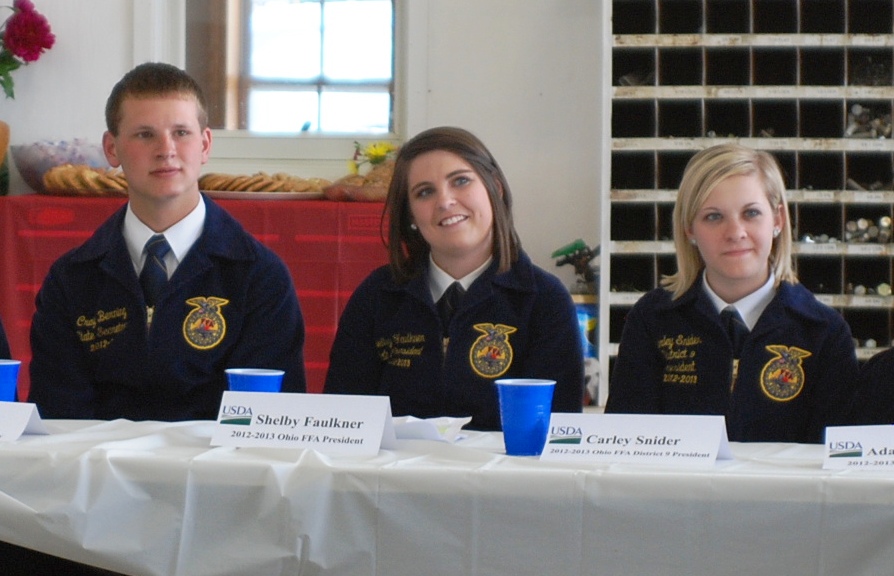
Ohio FFA members listen to Agriculture Acting Deputy Secretary Michael Scuse at an roundtable disucssion in Licking County, OH on Thursday, May 30, 2013.